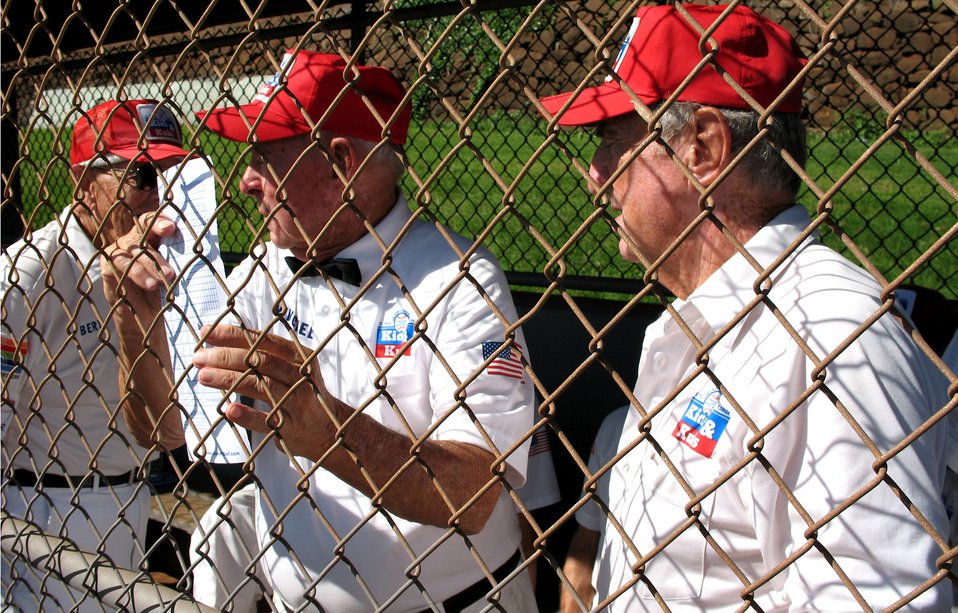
Time, and softball, heal old wounds

Winchell Smith, 88, and Andy Devine, 82, both members of the Kids & Kubs senior softball team from St. Petersburg, Fla., discuss their team's batting order before their game against the Over the Rainbows senior softball team from Japan Dec. 19 at Hans L'Orange Park in Waipahu, Hawaii. The two teams, comprising WWII veterans, met here to make peace with the past and play this historic game. The Kids & Kubs won the game 14-2.